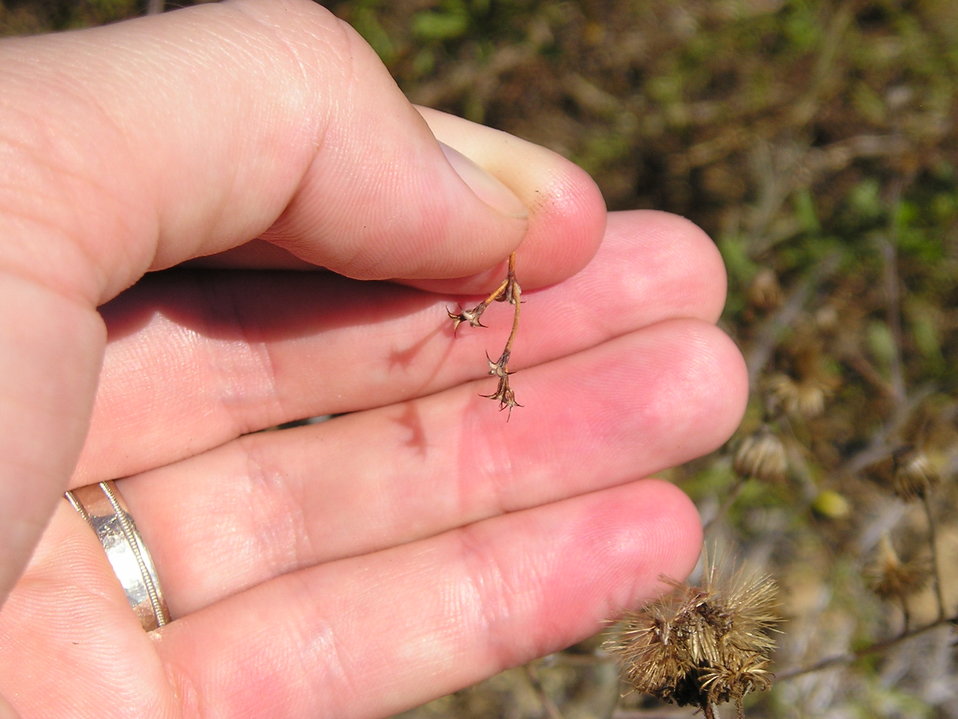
Orcutt's spineflower (Chorizanthe orcuttiana) skeleton

This is a piece of the plant's skeleton after it has completed it's life cycle. The small (1-15 cm) annual plant species is known to be found only in San Diego County, California. Listed as federally endangered, this plant prefers habitat within southern maritime chaparral or associated coastal sage scrub.